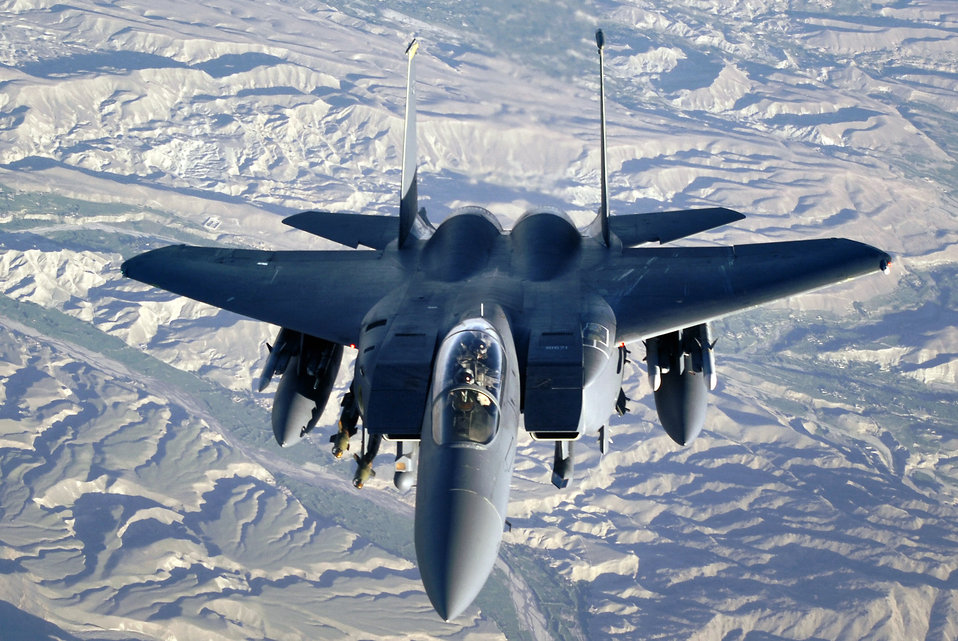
Feb. 15 airpower summary: F-15Es deter enemy fire

An F-15E Strike Eagle soars over the mountains and high desert of Afghanistan deterring enemy activities. The F-15Es perform shows of force and provide close-air support for International Security Assistance Force ground operations.